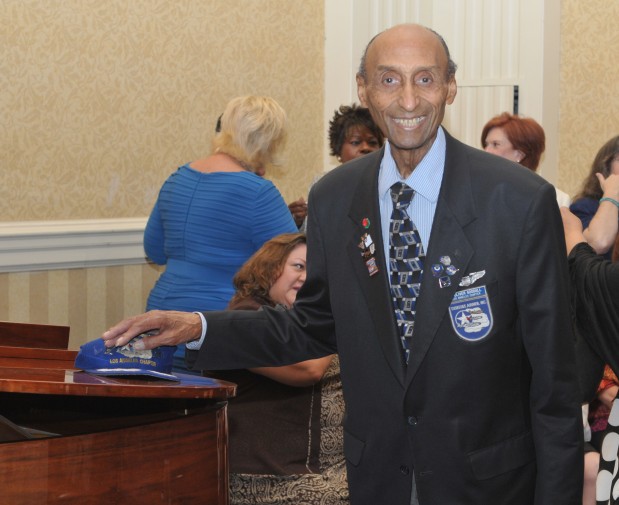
Lt. Oliver Goodall